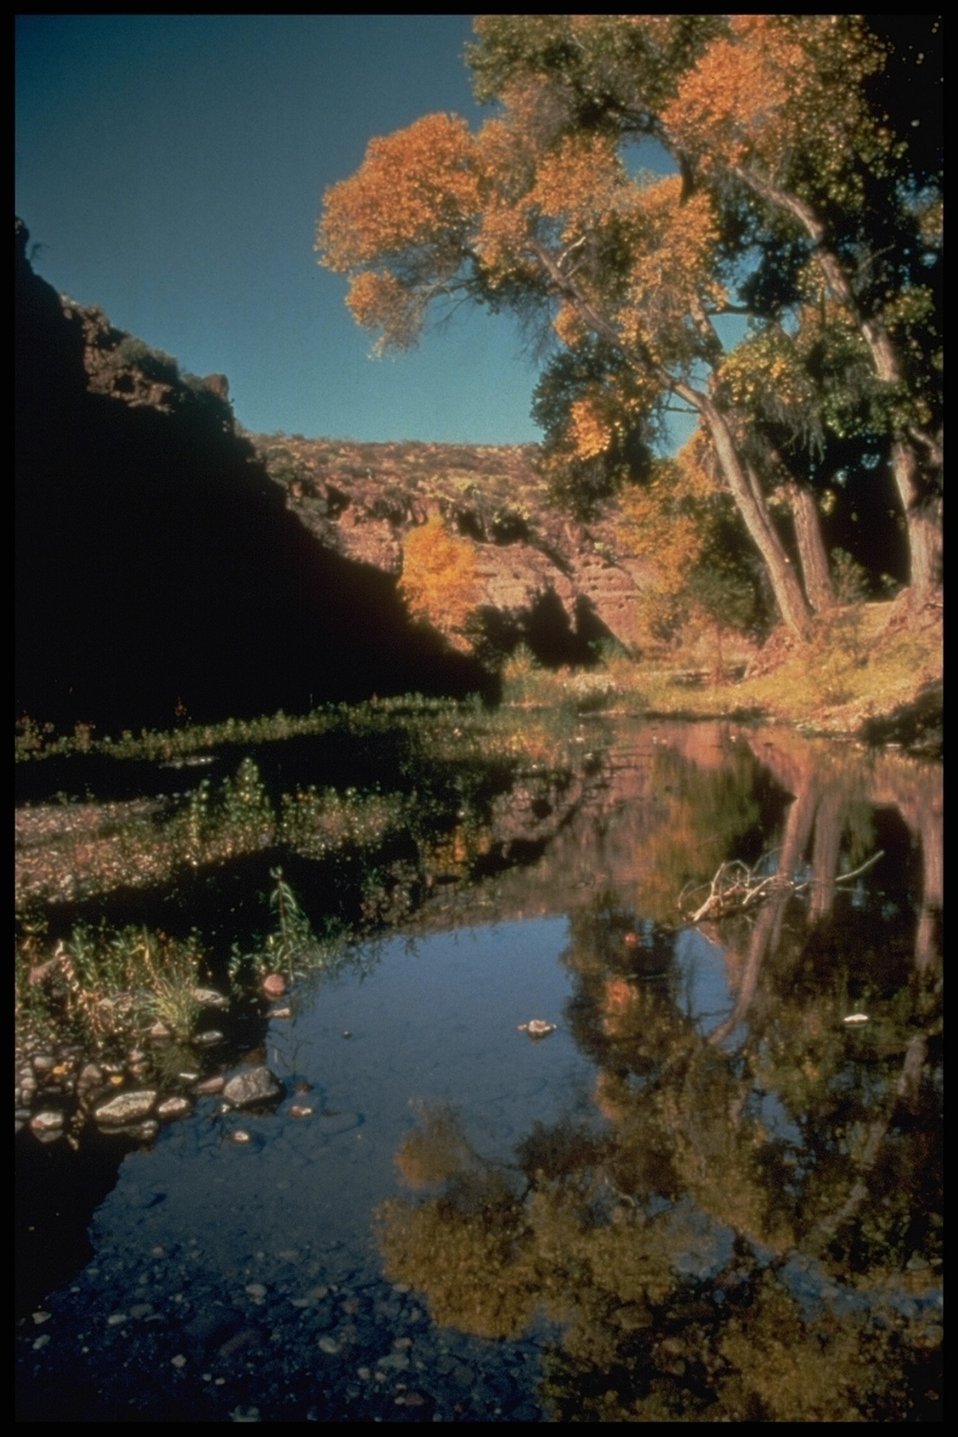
Arizona has a surprisingly diverse terrain. Hikes through wilderness areas often leads to breathtaking views.